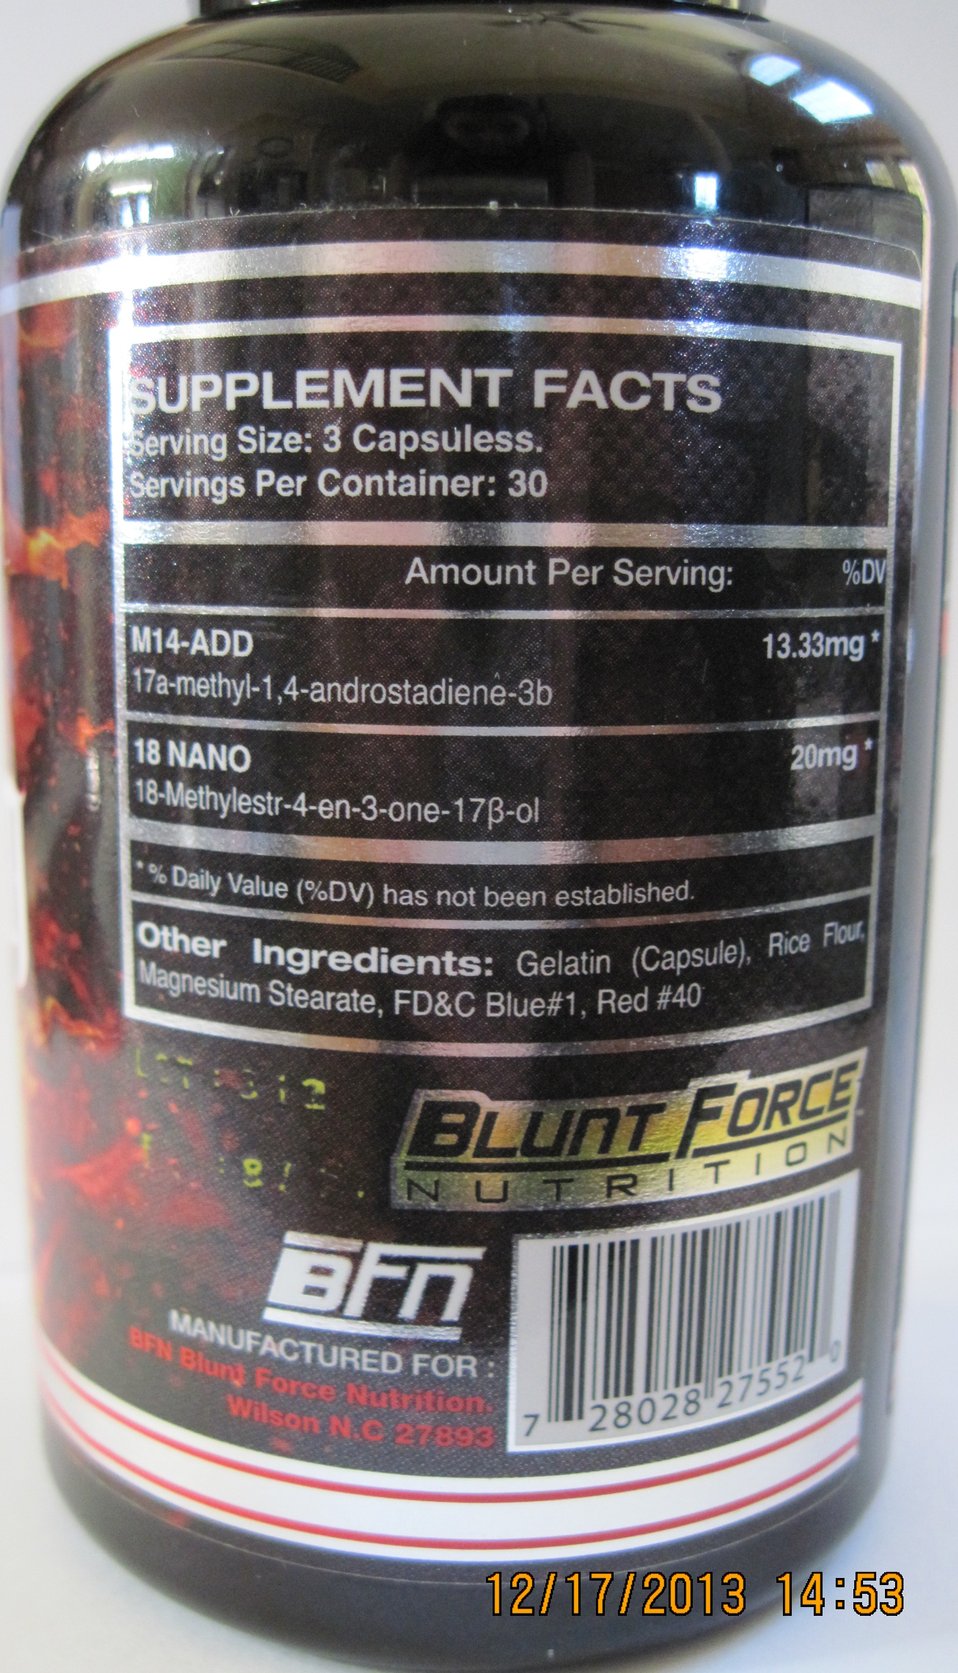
Mass Destruction

The U.S. Food and Drug Administration is advising consumers to immediately stop using a product called Mass Destruction, marketed as a dietary supplement for muscle growth. The product is labeled to contain at least one synthetic anabolic steroid and has been linked to at least one reported serious illness. For more information, read the press release.

And read this Consumer Update: Beware of Fraudulent ‘Dietary Supplements’